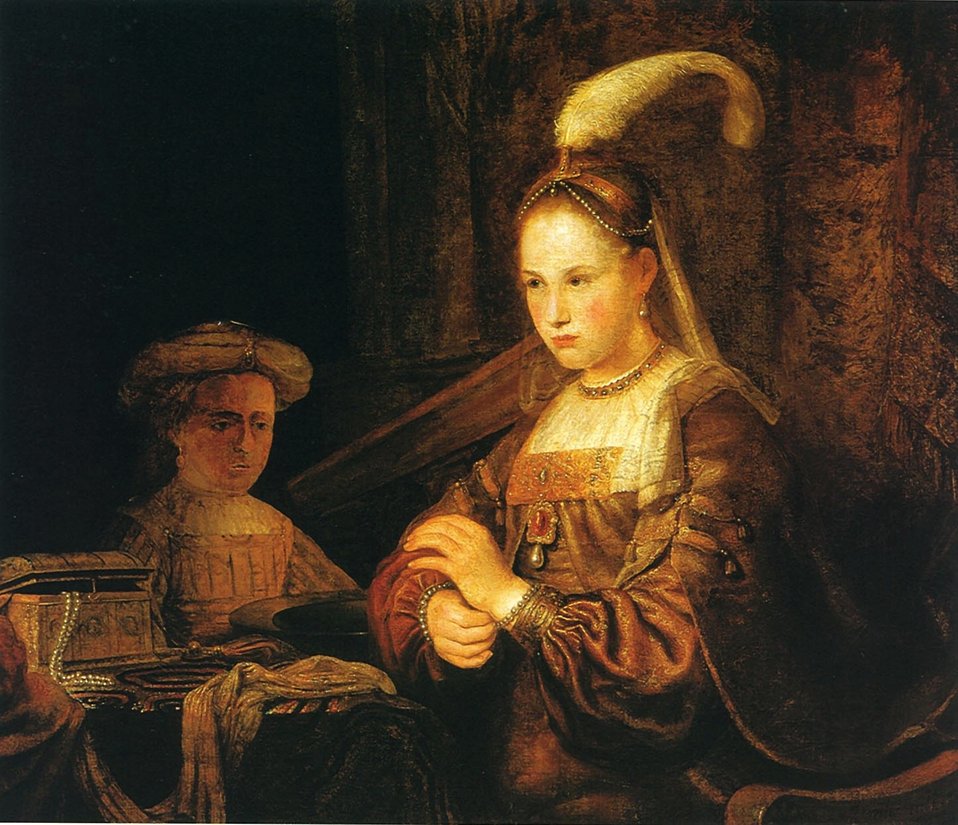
Gelder A lady at her toilet